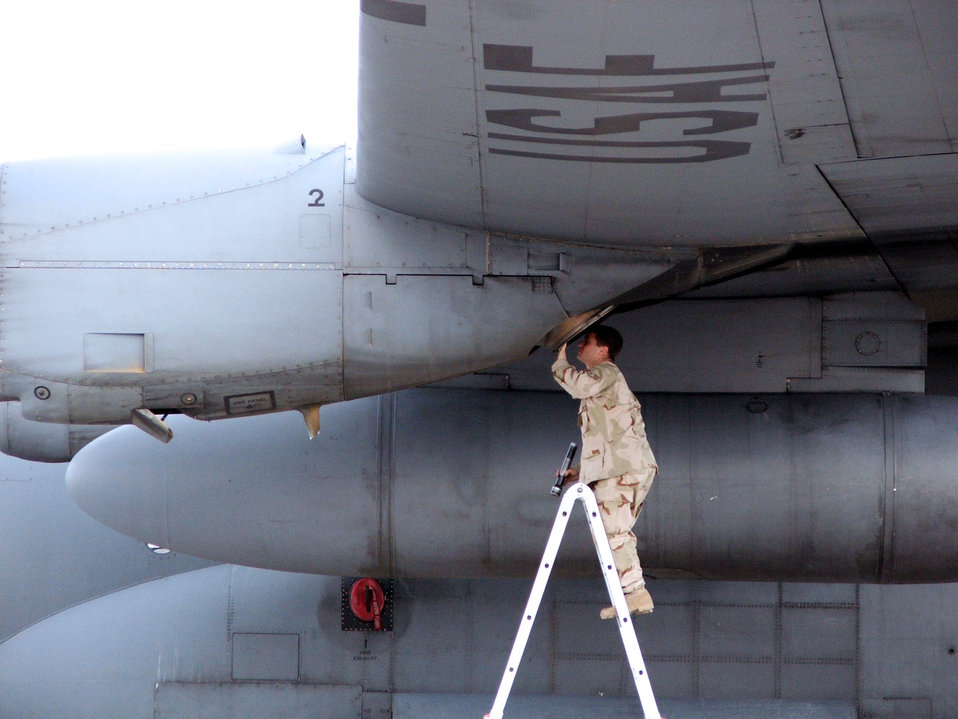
Searching high and low

KARSHI-KHANABAD AIR BASE, Uzbekistan -- Staff Sgt. Michael Maddox checks a C-130 Hercules engine during airfield maintenance operations here April 8. He is a C-130 crew chief with the 774th Expeditionary Airlift Squadron and is deployed from Elmendorf Air Force Base, Alaska.